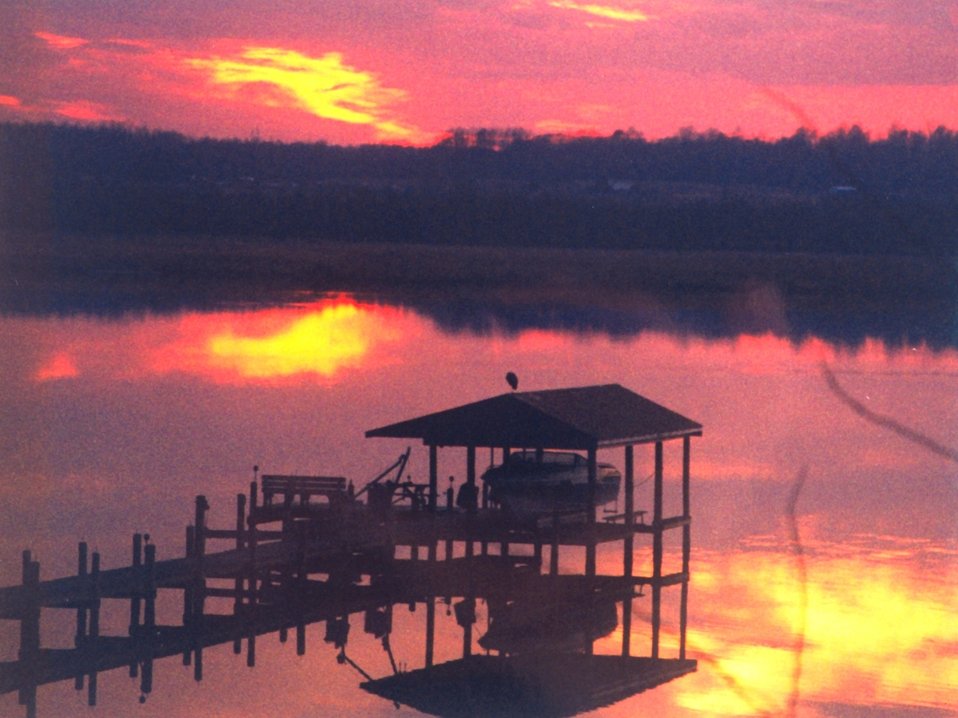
Patuxent River sunset with reflections on a calm river.